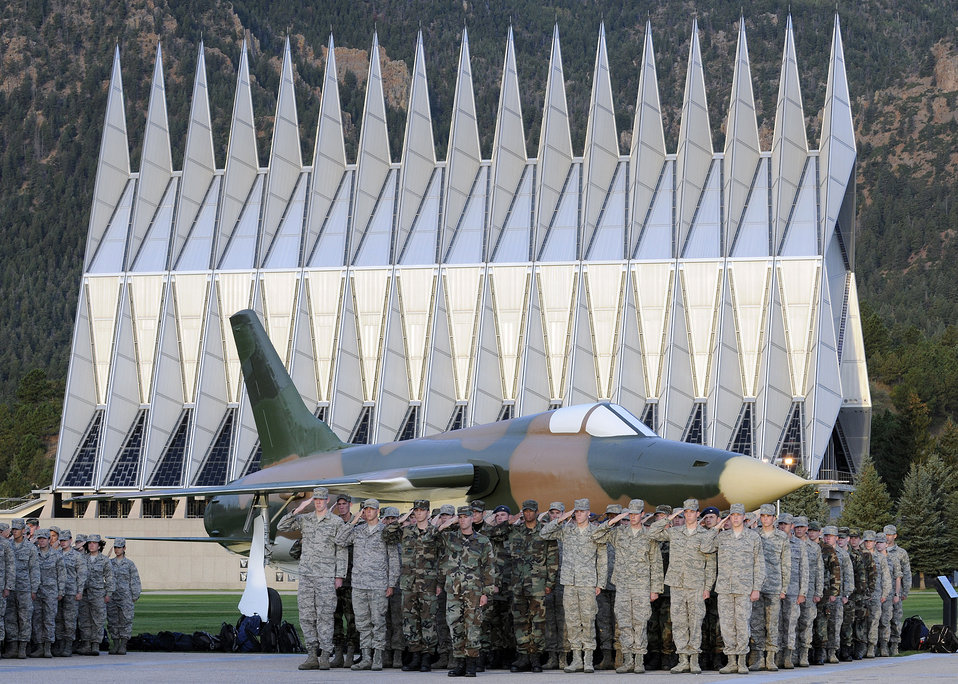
Reveille Ceremony

Cadet squadron 21 salutes during a reveille formation in honor of Patriot's Day and the Fallen Heroes of 9/11 at U.S. Air Force Academy, Colo., Sept. 11, 2009. Behind them is an F-105 Thunderchief undergoing restoration.